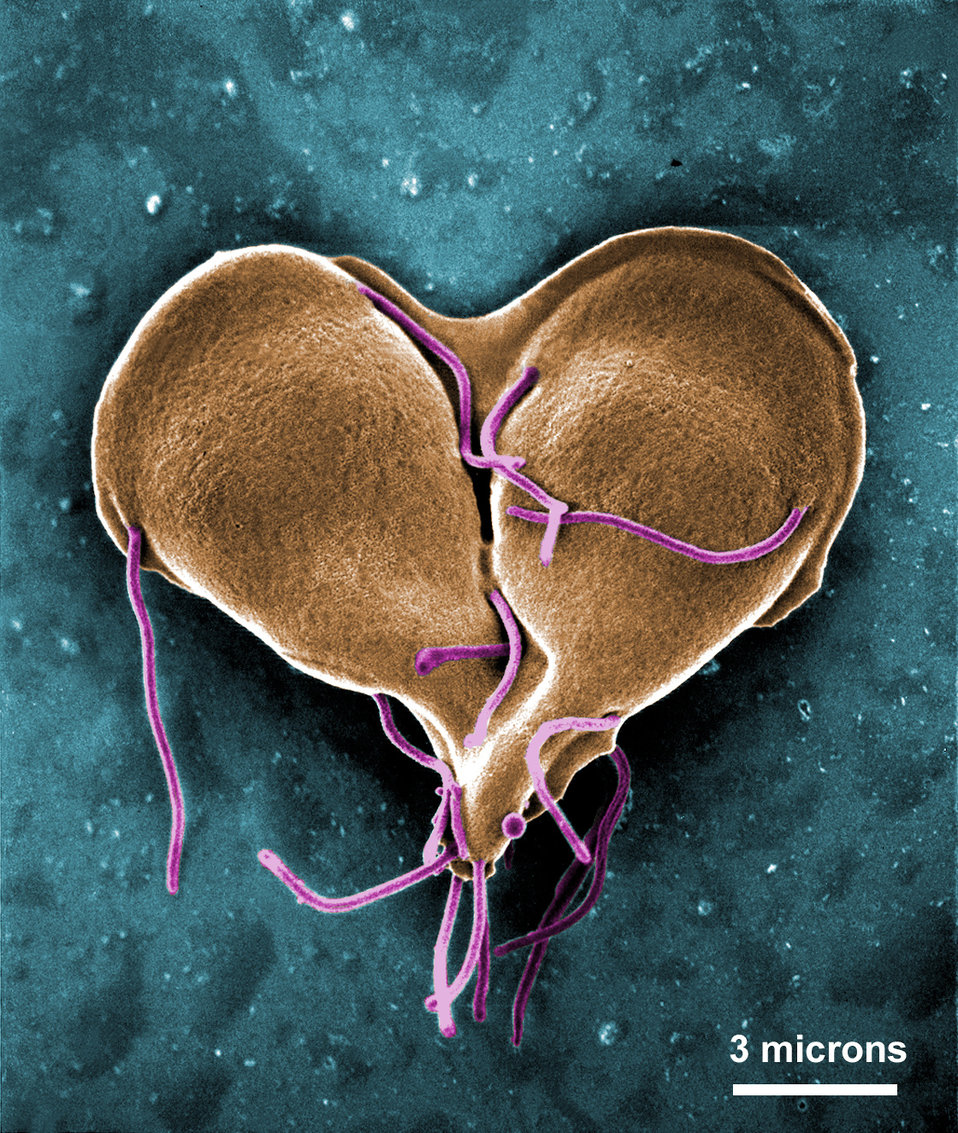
This digitally-colorized scanning electron micrograph (SEM) depicted a Giardia lamblia protozoan that was about to become two, separate organisms, as it was caught in a late stage of cell division, producing a heart-shaped form.